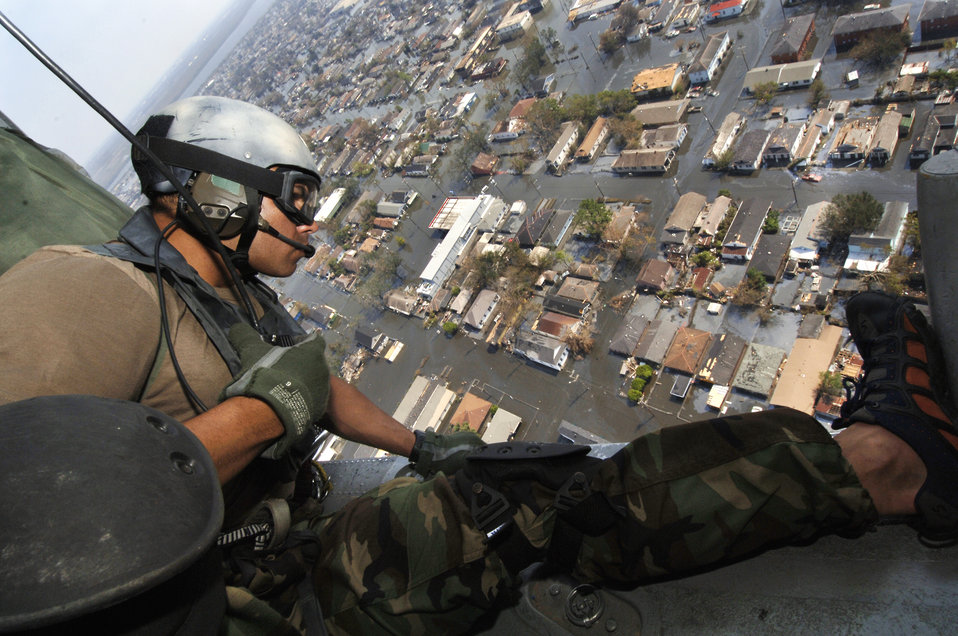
Hoist rescue

NEW ORLEANS -- Tech. Sgt. Lem Torres surveys houses Sept. 2 looking for victims of Hurricane Katrina. Sergeant Torres is a pararescueman in the 38th Rescue Squadron, Moody Air Force Base, Ga.